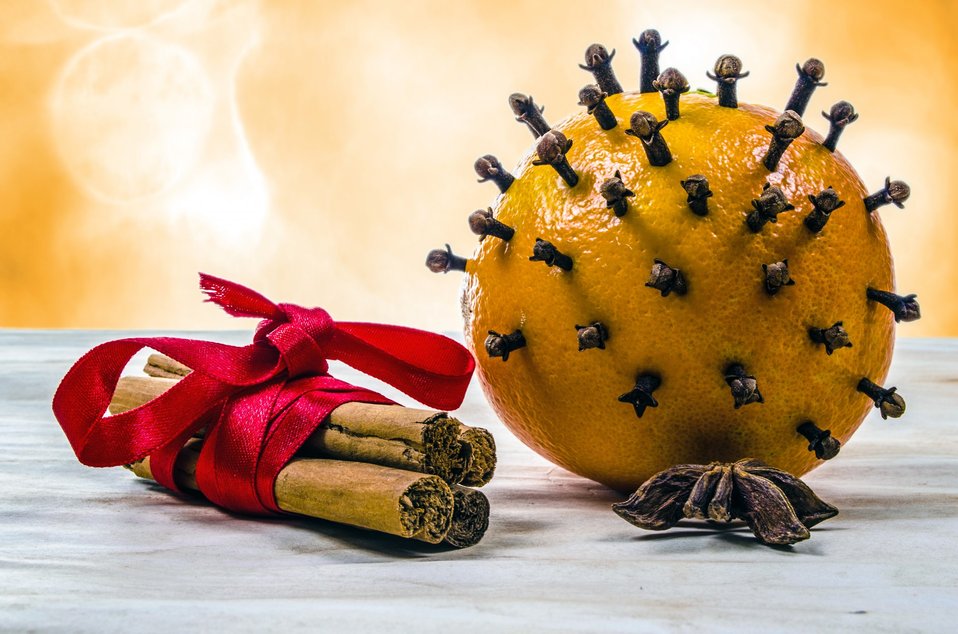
Christmas orange.